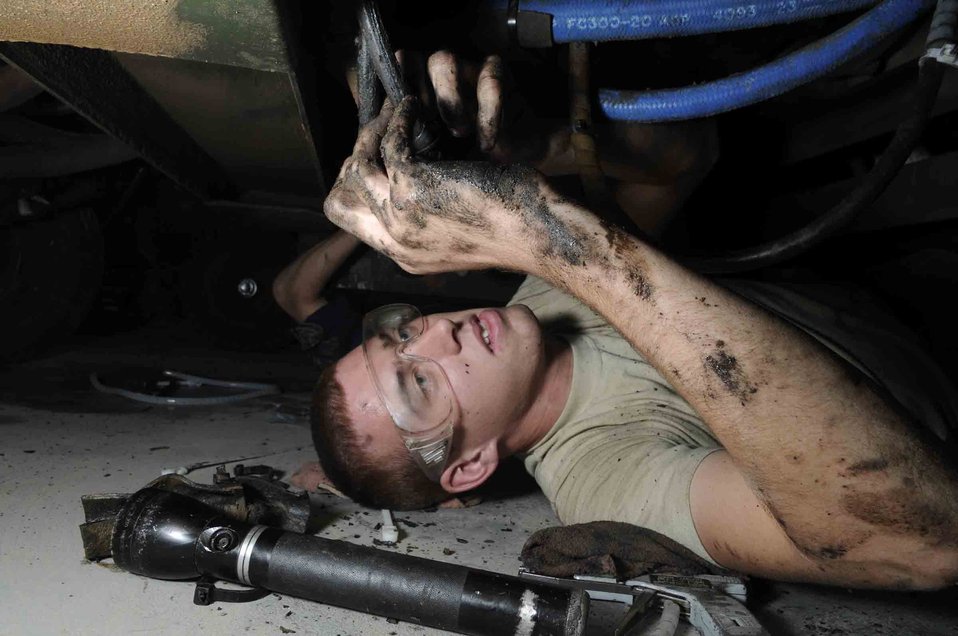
Down and dirty

Senior Airman Anthony Dodge applies chaffe wrapping on hydraulic hoses while underneath a hydraulic test stand to prevent hoses from bursting while in operation June 18 at a Southwest Asia air base. Airman Dodge replaces all wrapping due to the wear and tear, intense heat and mechanical vibrations apply to the hoses. Airman Dodge is assigned to the 379th Expeditionary Maintenance Squadron and deployed from MacDill Air Force Base, Fla.